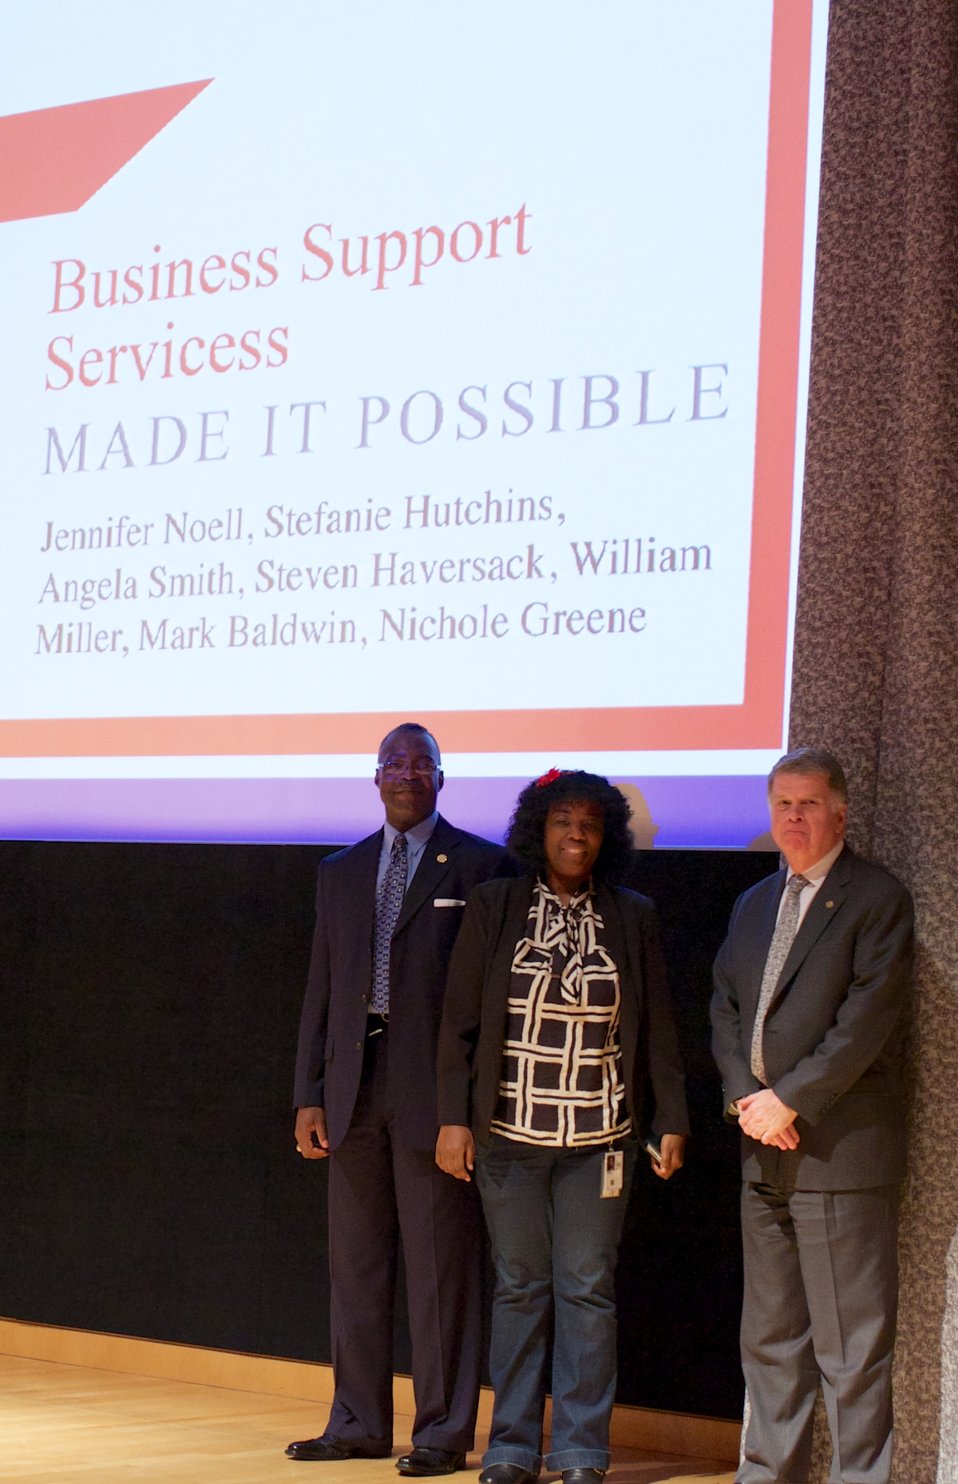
CFC Recognition Event